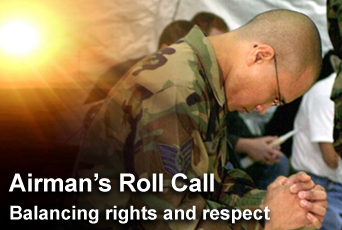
Airman's Roll Call

This week's Airman's Roll Call highlights Airmen's rights to practice their beliefs while respecting the beliefs of others.